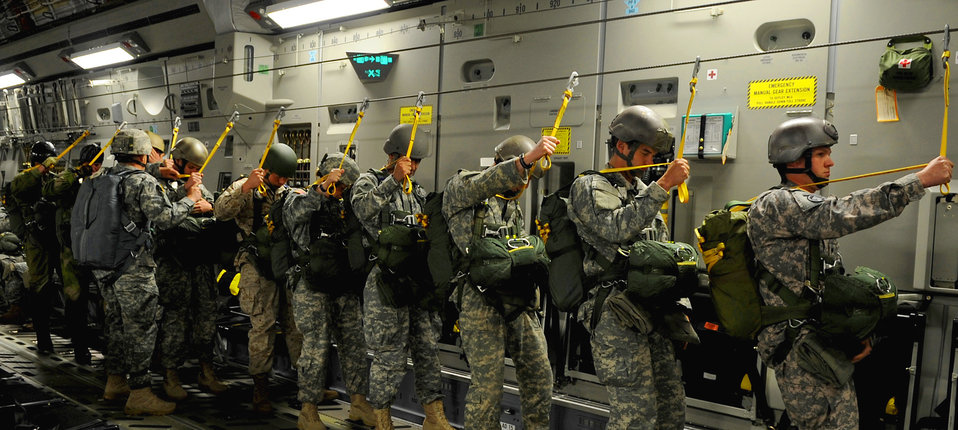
Ramstein Airmen participate in NATO jump

Airmen, Soldiers and Norwegian soldiers prepare to execute an airborne jump from a C-17 Globemaster III June 15, 2010 over Alzey, Germany.